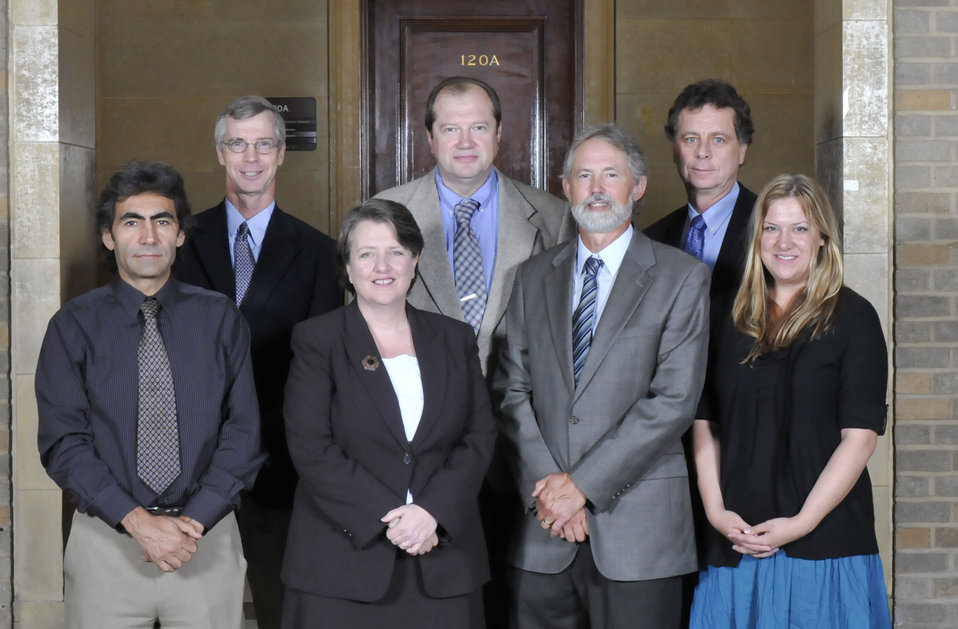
Conifer Translational Genomics Network Team
National Institute of Food and Agriculture, Davis, CA
David B. Neale, Group Leader
For a collaborative research and outreach approach to successful development and application of genomics-based tree breeding technology that will enhance US competitiveness in the production of forest products.
On September 14, 2011 in the patio of the Whitten Building Patio of the US Department of Agriculture in Washington, DC.